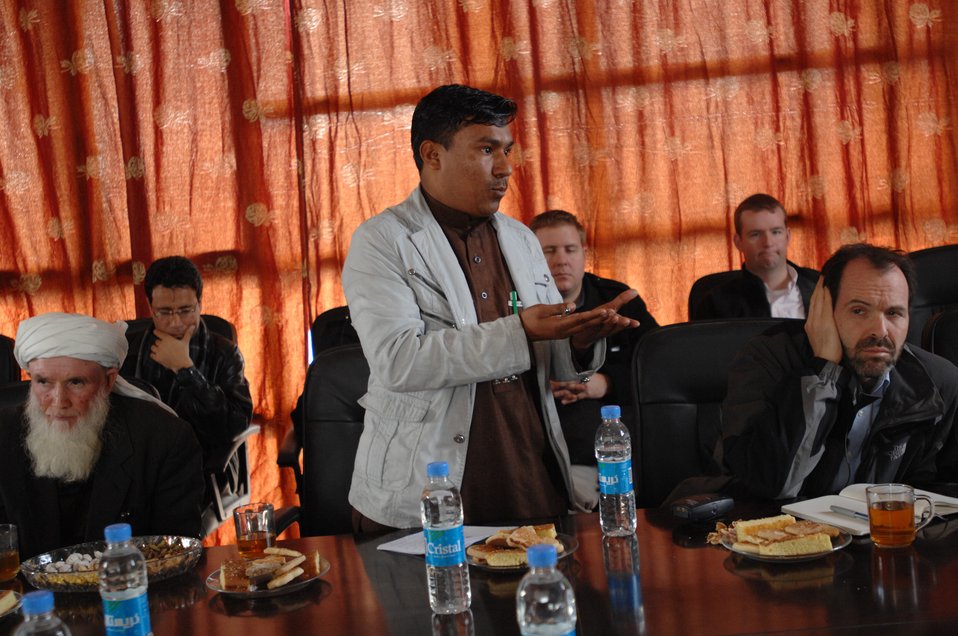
110209sv Shah156